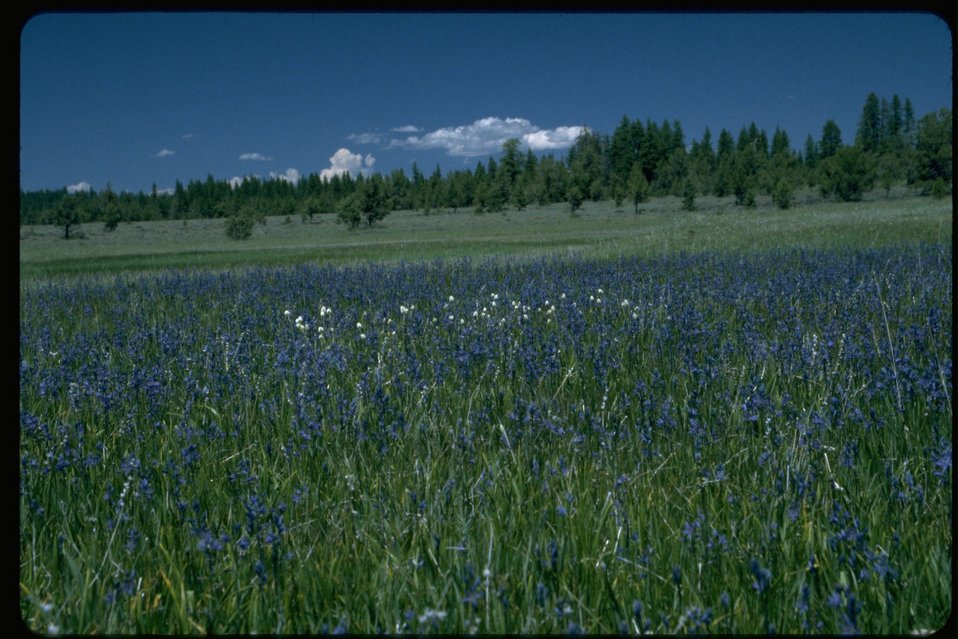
Long shot of Blue Camas site.